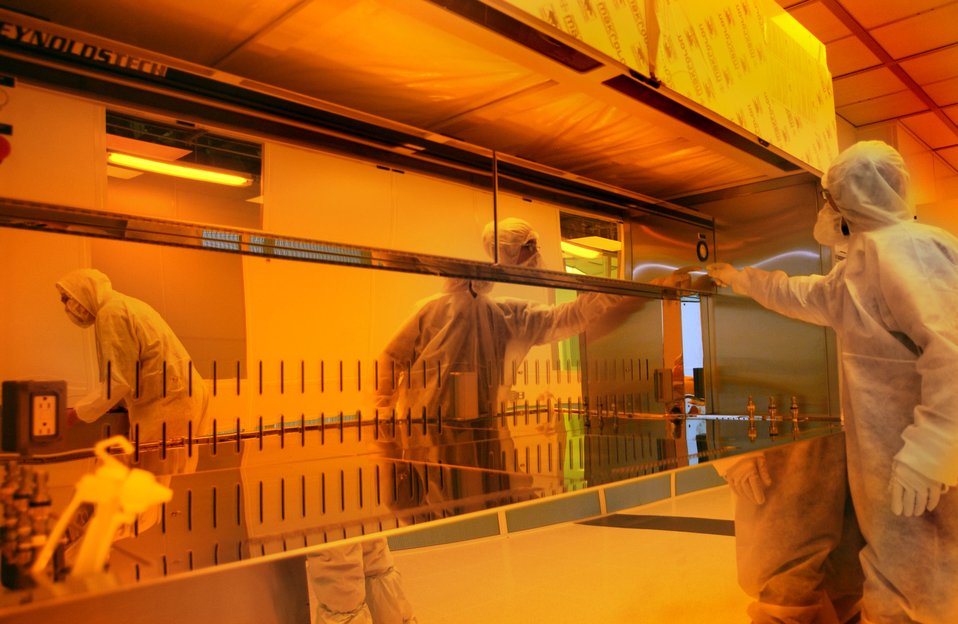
Clean Room at Center for Nanophase Materials Sciences

05-220-184 DOE photo by Lynn Freeny

Oak Ridge National Lab. Oak Ridge Tennessee 8-16-2005